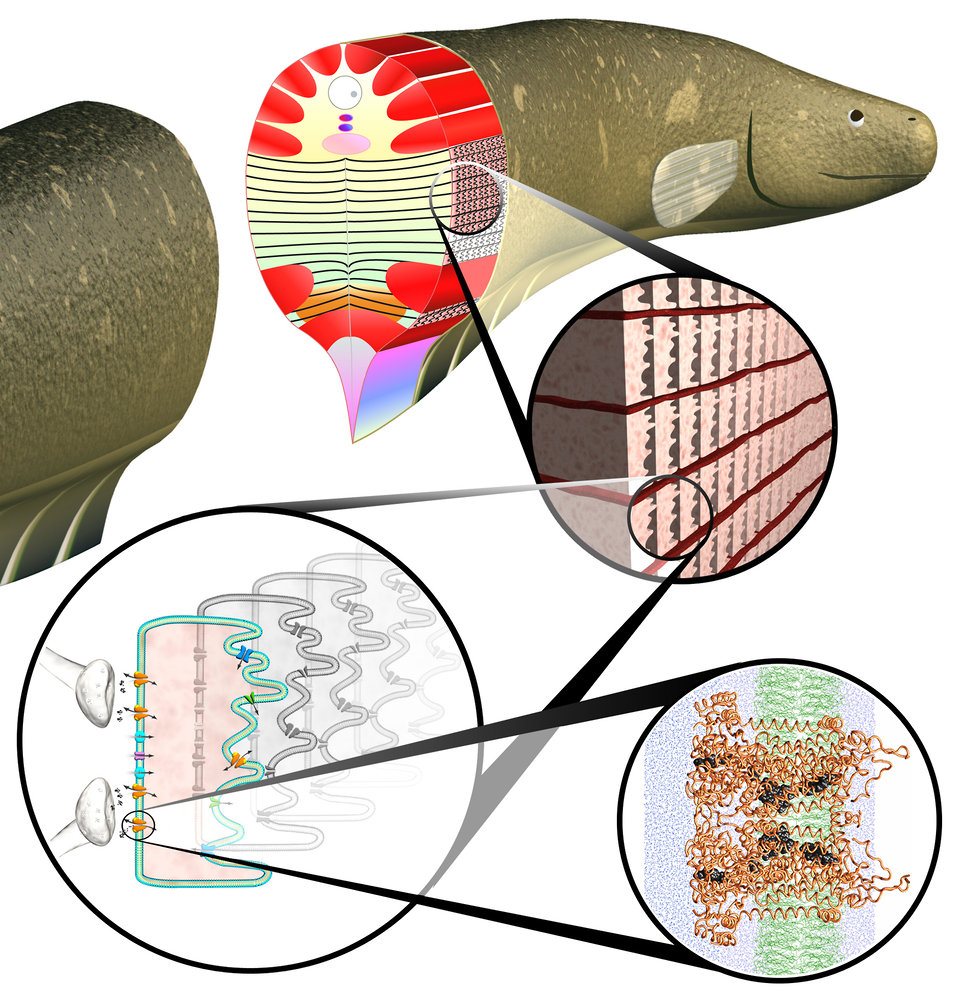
Biotechnology, systems biology, artificial cells

Electric eel anatomy: The first detail shows stacks of electrocytes, cells linked in series (to build up voltage) and parallel (to build up current). Second detail shows an individual cell with ion channels and pumps penetratimng the membrance, The Yale/NIST model represents the behavior of several such cells. Final detail shows an individual ion channel, one of the building blocks of the model.